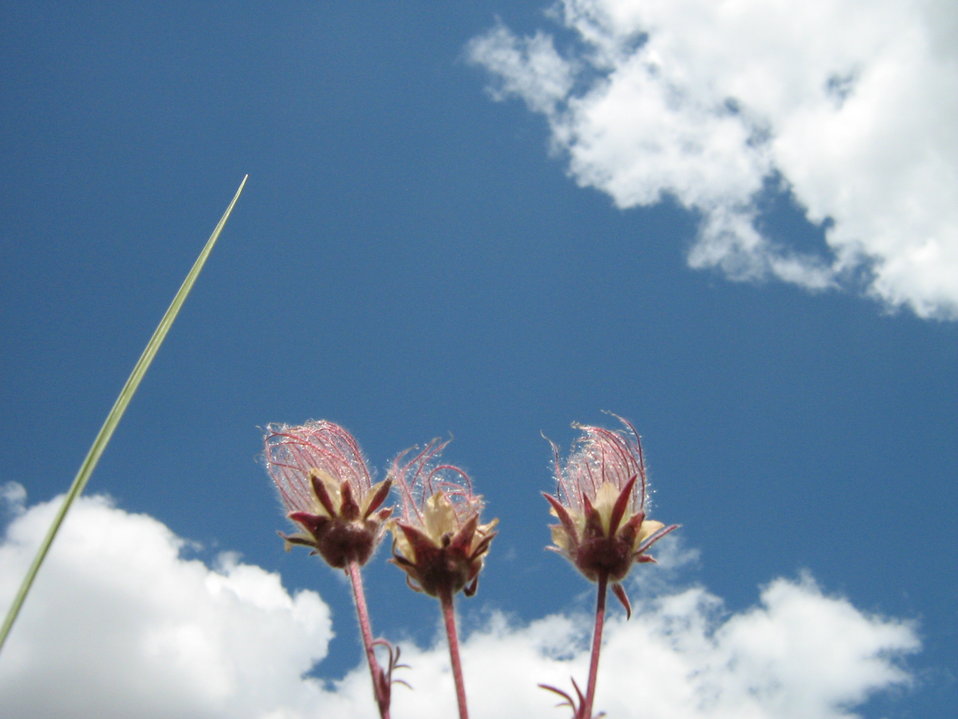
Prairie Smoke

Also known as 'old man's whiskers', prairie smoke (Geum triflorum) blooms from late May to July. The drooping reddish purple flowers may be overlooked and the plant is most conspicuous during fruiting when the flowers mature and turn upright.